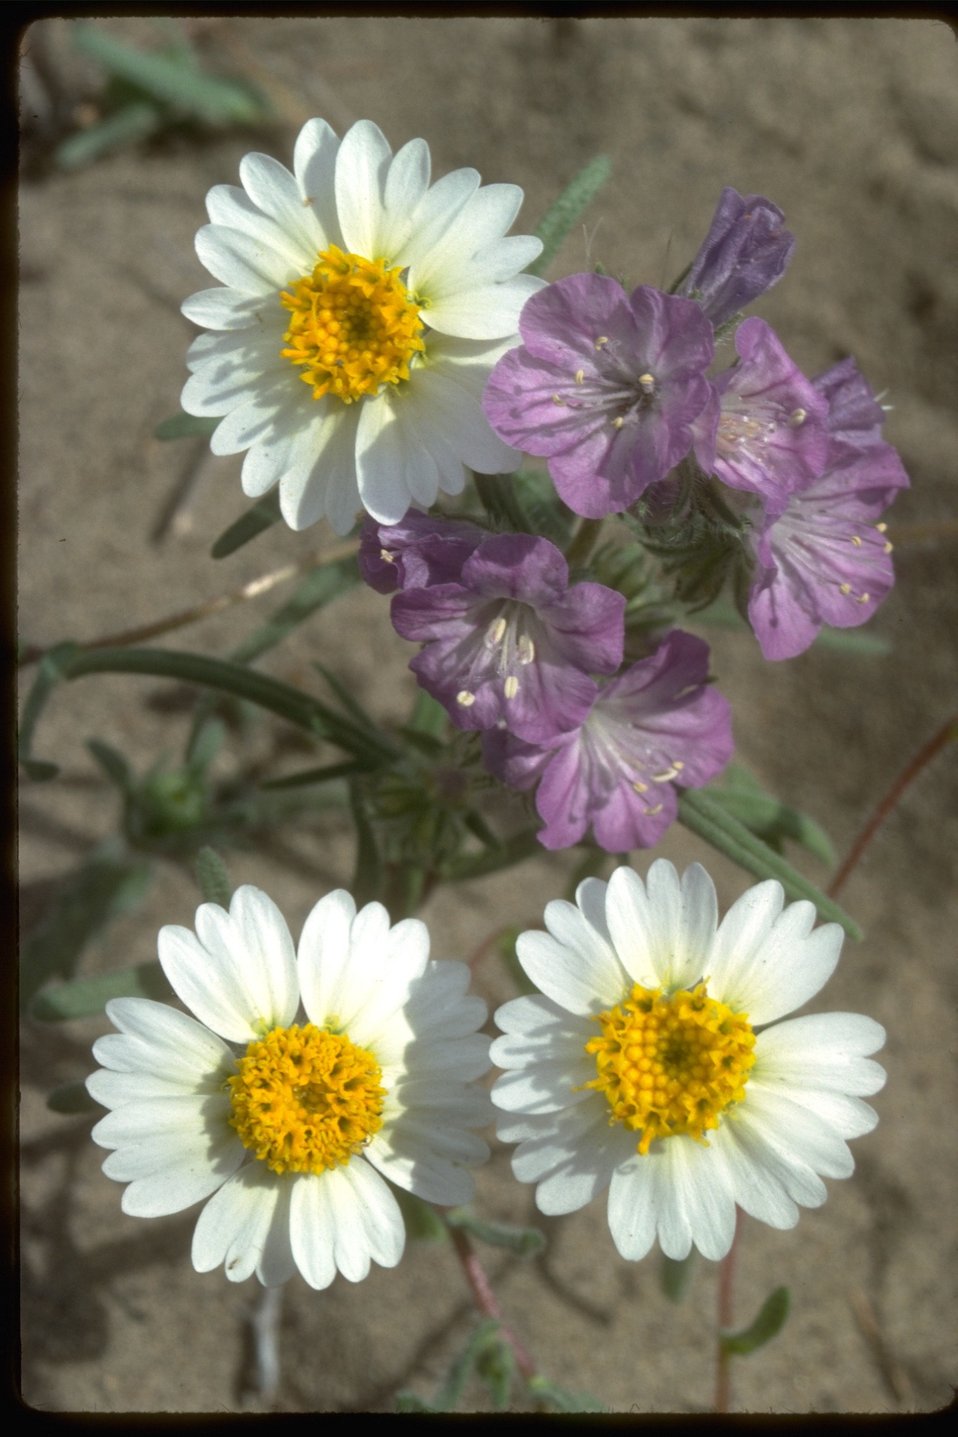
Wildflowers (Layia glandulosa and Phacelia linearis) in Juniper Forest Management Area, Washington.